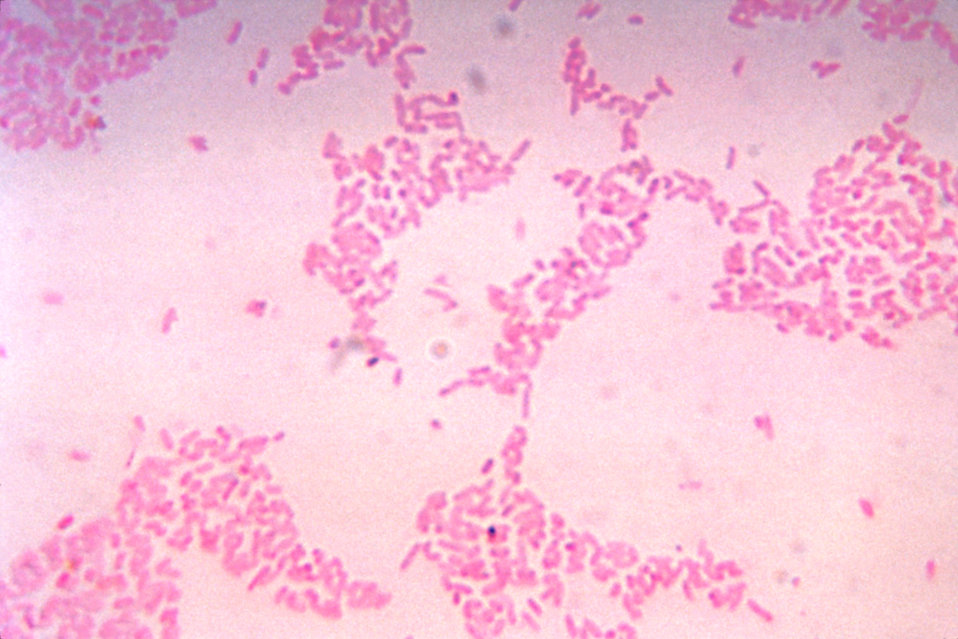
This photomicrograph reveals the bacterium Bacteroides thetaiotaomicron grown on blood agar for 48 hours.